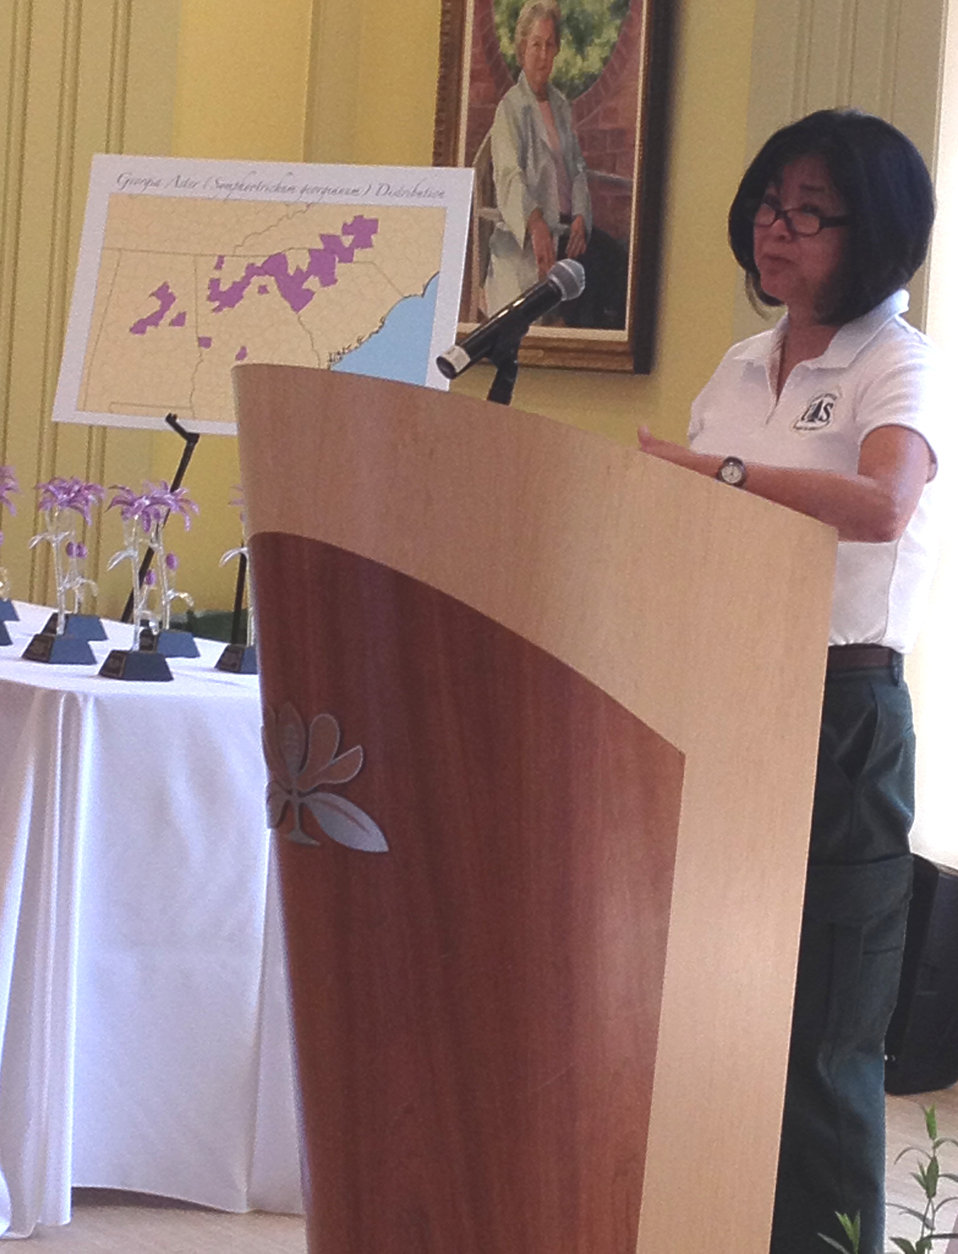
U.S. Forest Service's Liz Agpaoa gives remarks

Georgia aster is an uncommon Southern plant that declined for decades, to the verge of receiving federal protection. However, nine organizations, private and public, are committing to conserve the plant in an effort that should keep it off the endangered species list. The commitment will be memorialized this Friday in an agreement called a Candidate Conservation Agreement, designed to proactively conserve plants and animals before they need Federal protection.

The Candidate Conservation Agreement was signed on Friday, May 16 at the Atlanta Botanical Gardens.